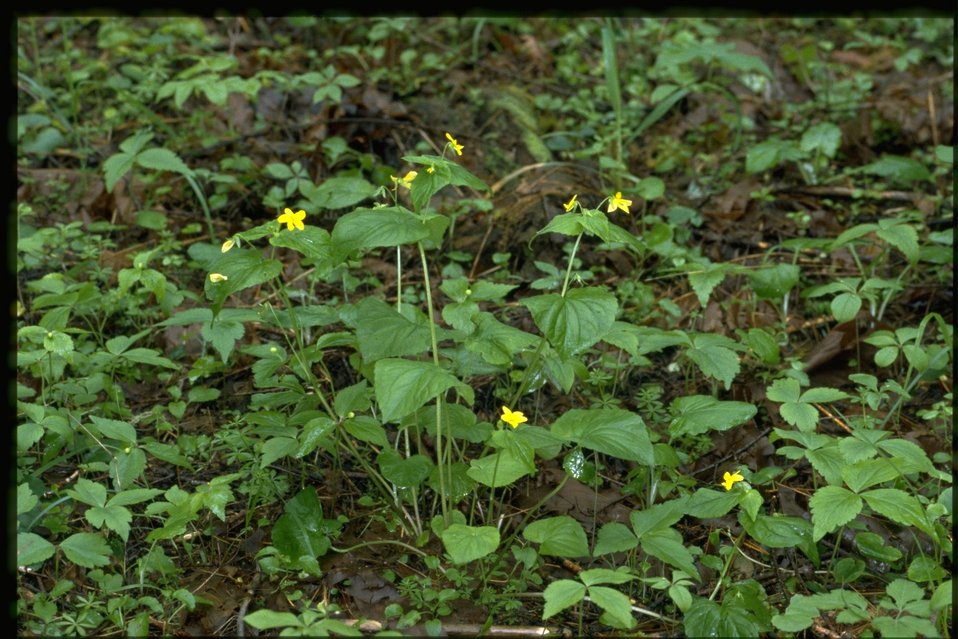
Farshot of stream violets (Viola glabella).